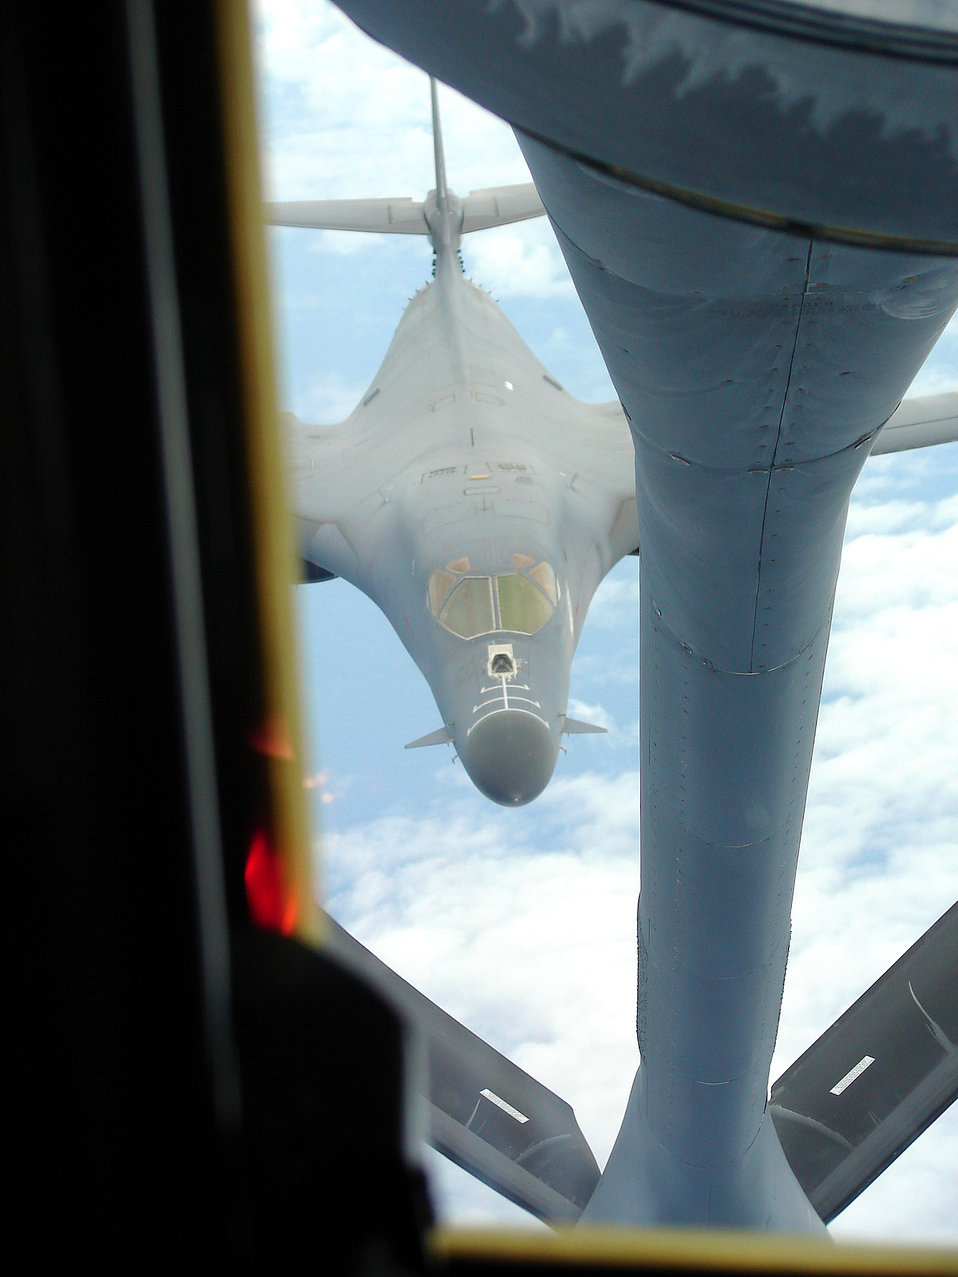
Mission success depends on refuelers

A B-1 Lancer prepares to take on fuel from a KC-135 over Southwest Asia. Both aircraft are deployed to the 40th Air Expeditionary Group.